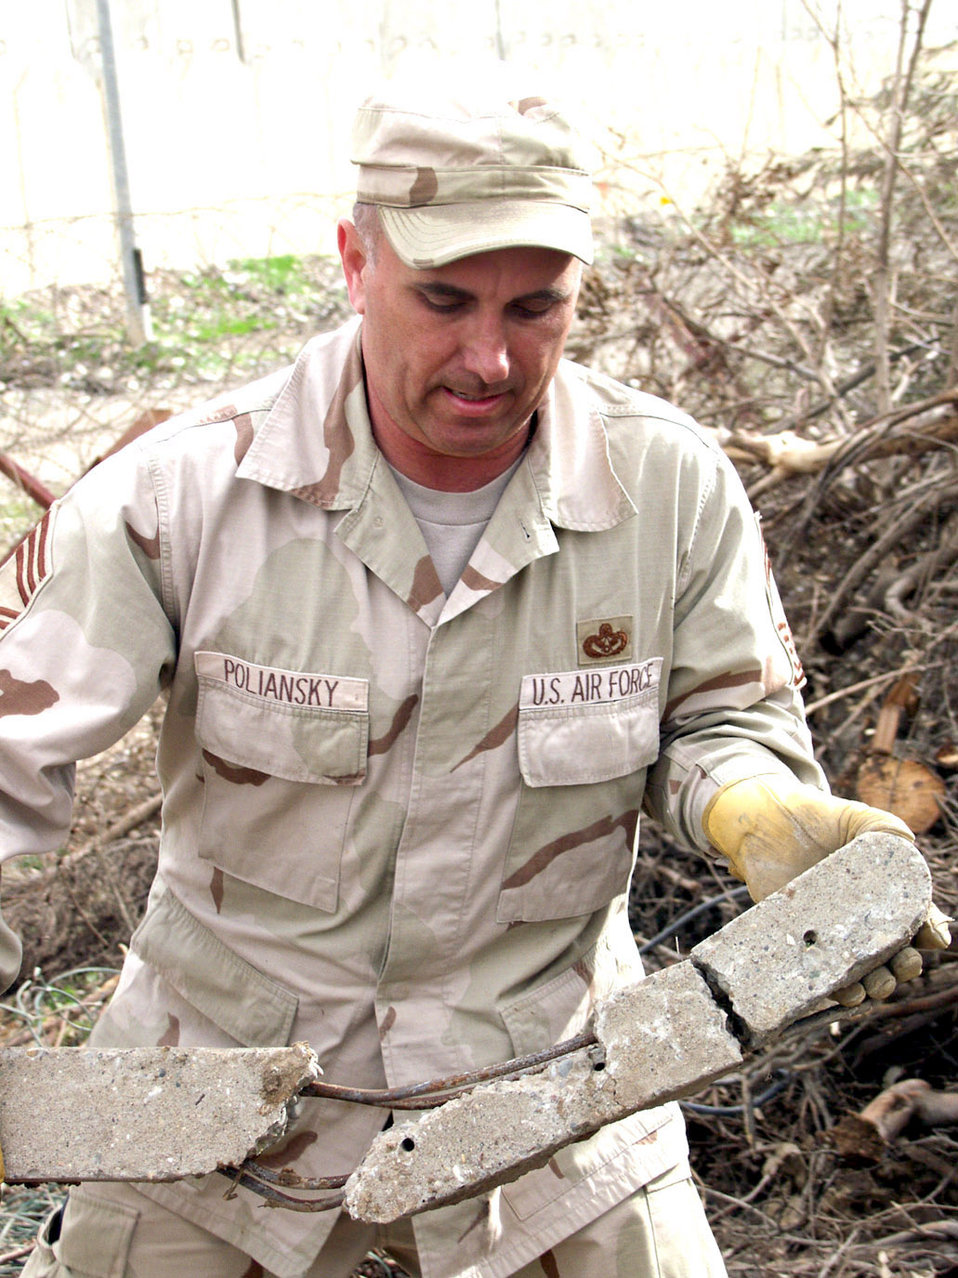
Airmen restoring mosque

KIRKUK AIR BASE, Iraq -- Chief Master Sgt. Walter Poliansky removes part of a concrete pillar during the Jan. 11 cleanup effort to help restore a mosque here. Chief Poliansky is chief of operations for the 506th Expeditionary Civil Engineer Squadron here.